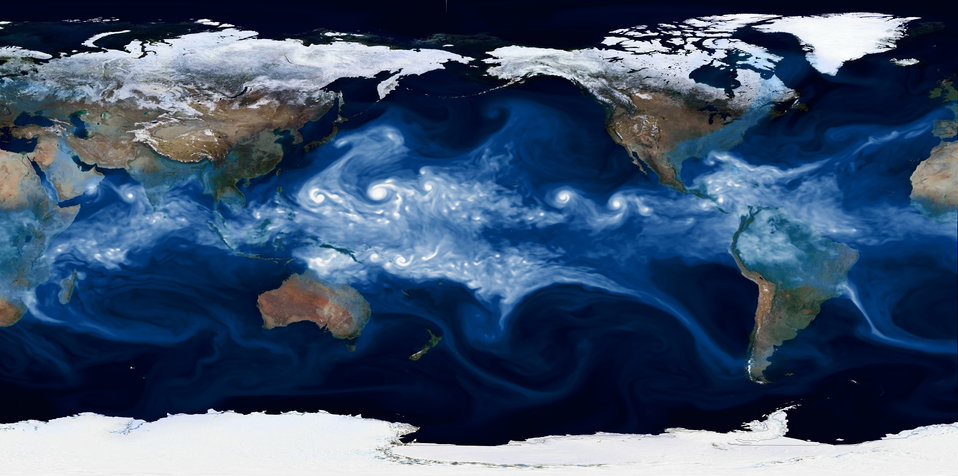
SHOWN IS COMMUNITY ATMOSPHERIC MODEL (CAM5.1) HIGH RESOLUTION SIMULATIONS, USED IN ATTRIBUTING CHANGES IN THE RISK OF EXTREME WEATHER AND CLIMATE. THE RESEARCH IS USED RESOURCES OF THE ARGONNE LEADERSHIP COMPUTING FACILITY.